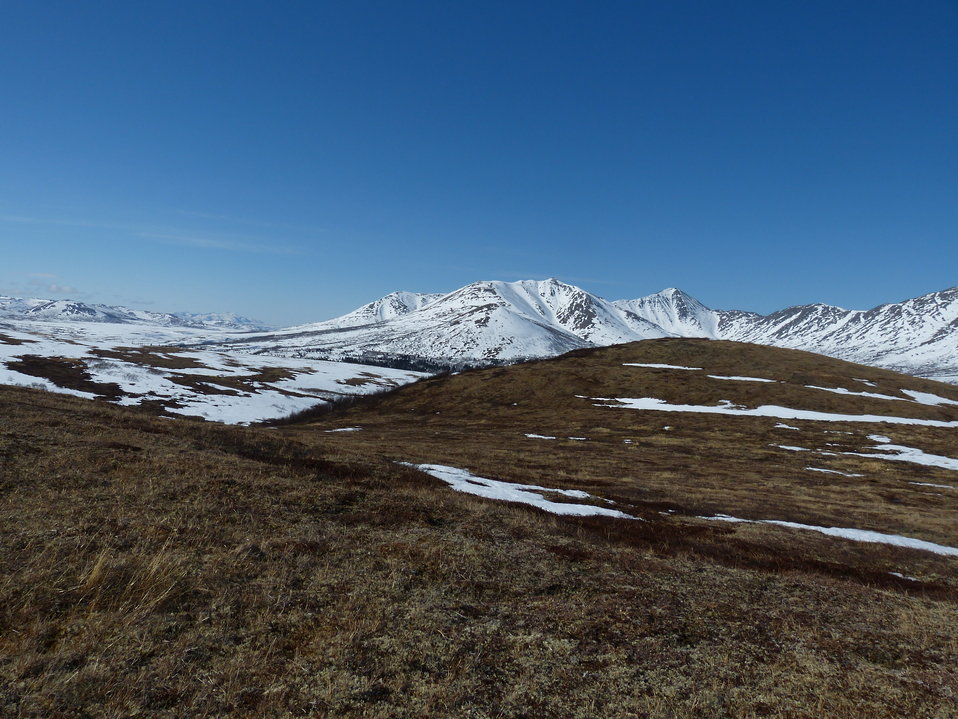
Kilbuck Mountains May2013 KSowl

Cliff-nesting raptor survey, Kilbuck Mountains, Yukon Delta National Wildlife Refuge

Photo credit: Kristine Sowl,
USFWS, YDNWR